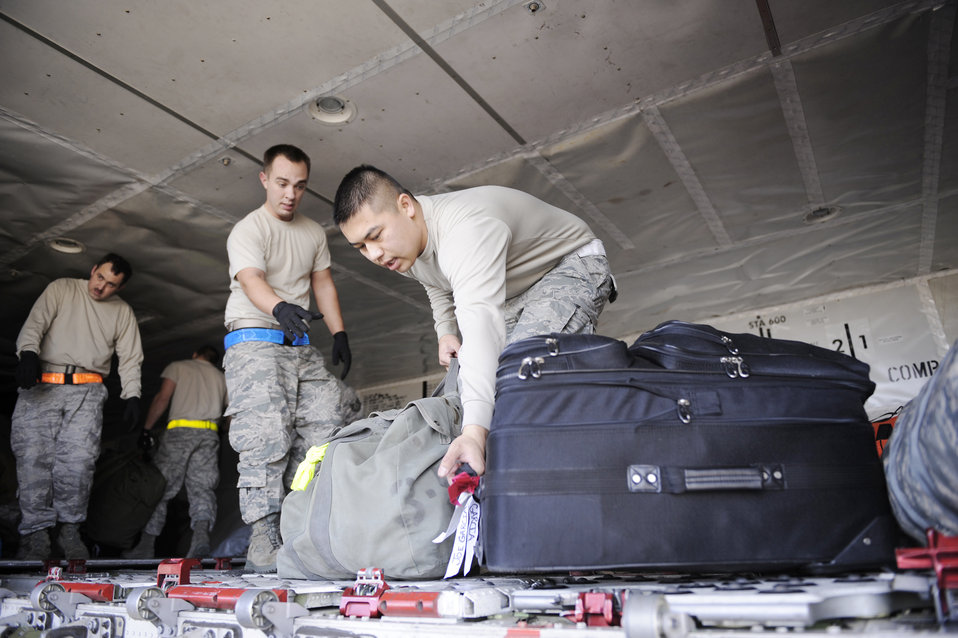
Squadron goes to South Korea

Airmen from the 726th Air Control Squadron load mobility bags at Mountain Home Air Force Base, Idaho, before the 391st Fighter Squadron deploys to South Korea, Jan. 18, 2010. The deployed Airmen will work alongside alliance partners to maintain peace and stability in the region.